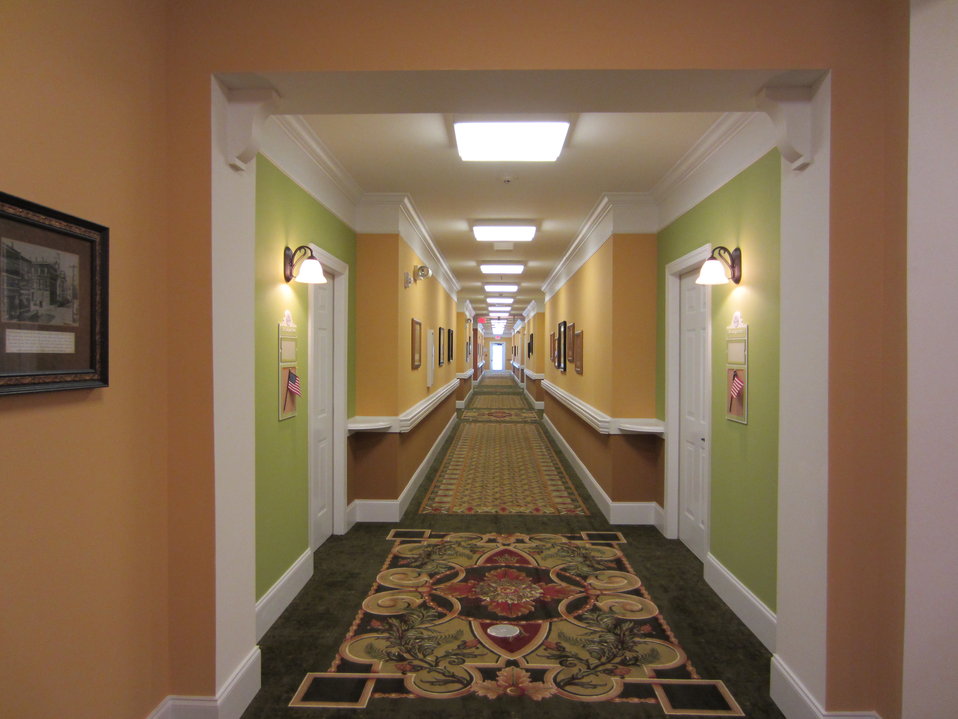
Daisy Hill - Hallway

The new Daisy Hill Assisted Living facility in Versailles, KY provides a bright, welcoming setting for senior citizens. The building was funded with a U.S. Department of Agriculture (USDA) Rural Development (RD) Business and Industry Guarantee (BIG) Loan program.